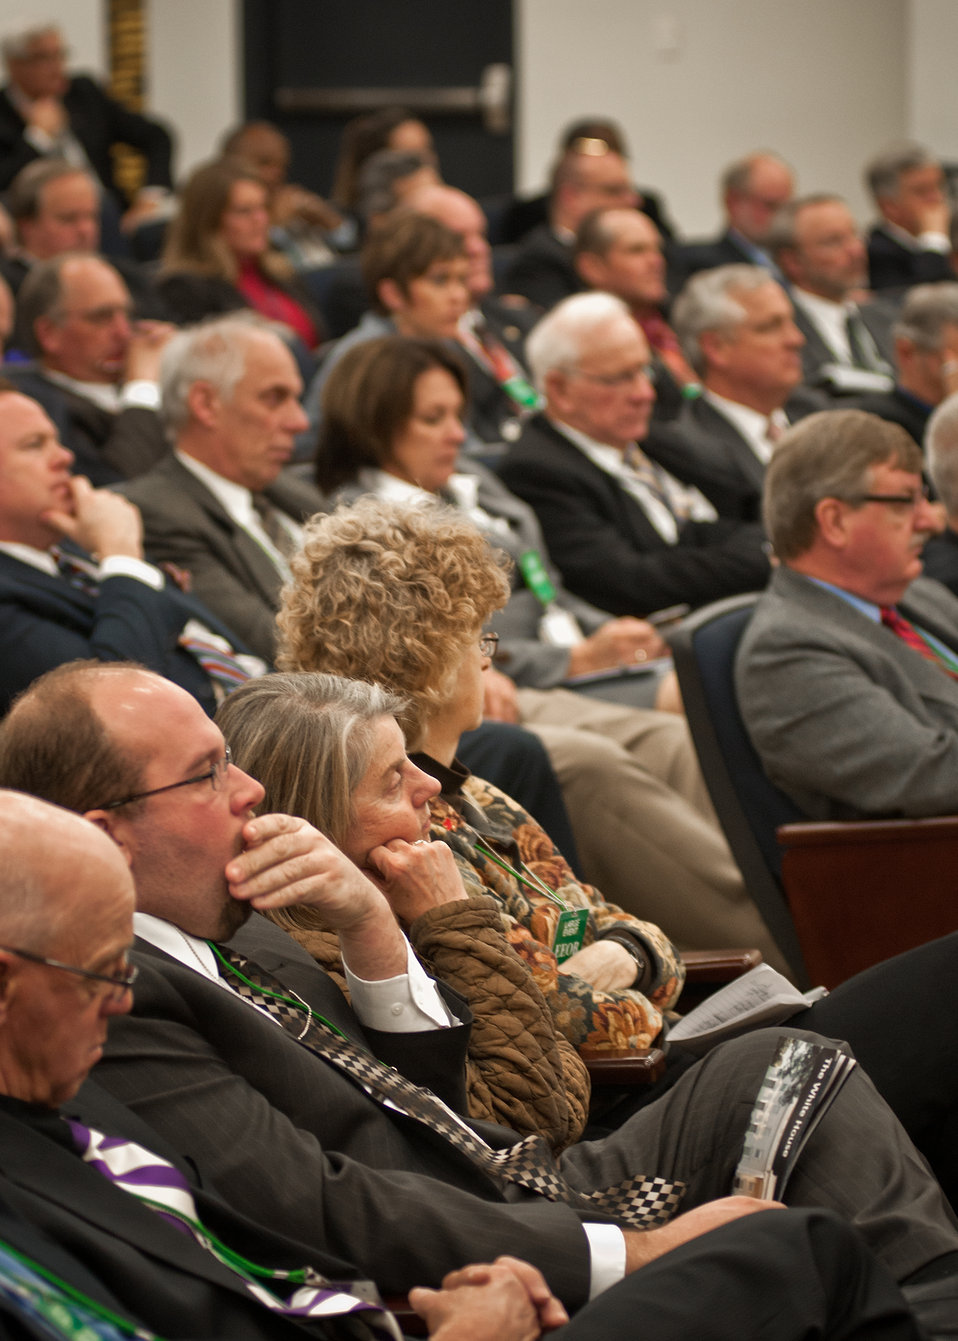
Elected members of state legislatures and from Canada had the opportunity to listen to and ask questions to Agriculture Secretary Tom Vilsack, members of his cabinet, White House Representatives and other Obama cabinet members at the 11th Annual Meeting of State Agriculture and Rural Leaders at the Eisenhower Executive Office Building in Washington, D.C., on Friday, January 6, 2012.